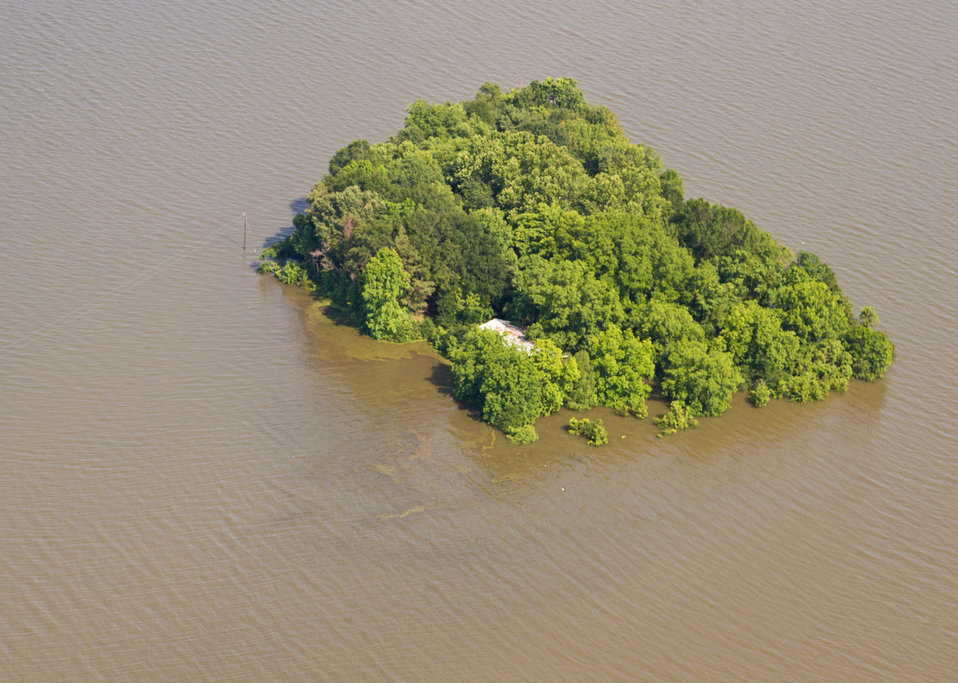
Aerial view of Mississippi River flood of farms, wilderness, and populated areas, on Thursday, May 19, 2011. from the MS side. Aerial platform was a UH-60 Blackhawk commanded by Col. Kennedy and his flight crew from the Army Aviation Support Facility #1 at Hawkins Field in Jackson, MS.